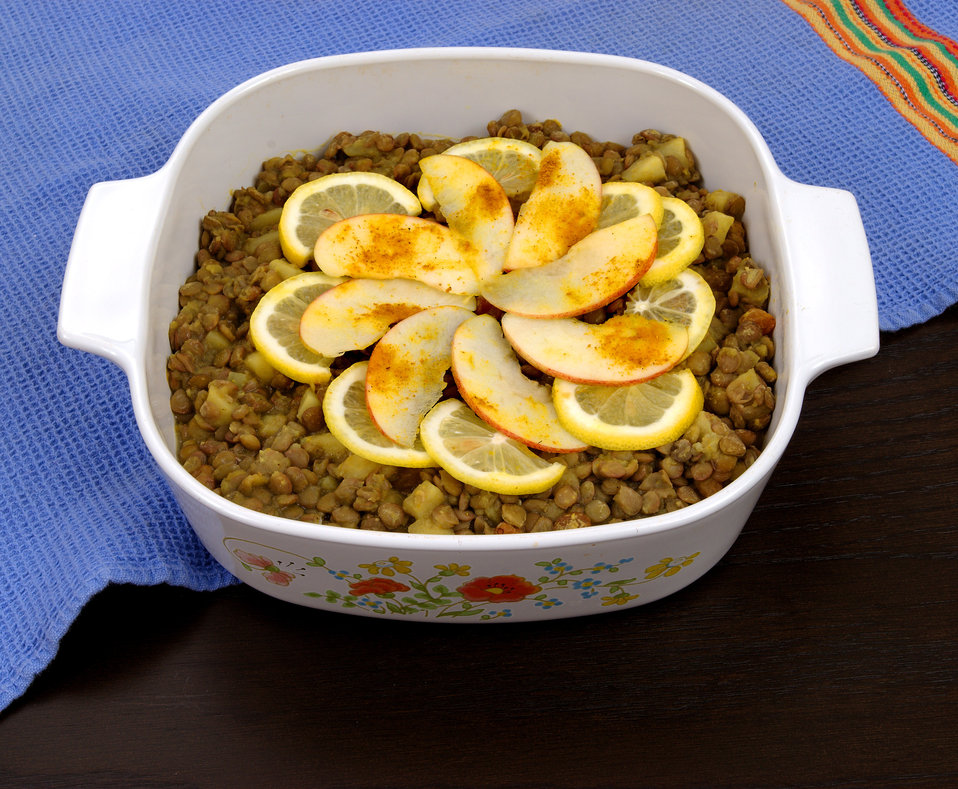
This photograph depicts a casserole dish containing a freshly-cooked side dish of Fruity Curried Lentils. Comprised of ingredients including lentils, apples, raisins, lemon yogurt, curry powder, and a touch of salt, this recipe may be seen using the link below. Nutrient-dense, this flavorful salad packs a terrific nutritious punch, and is a great choice as a lunch, or side dish.